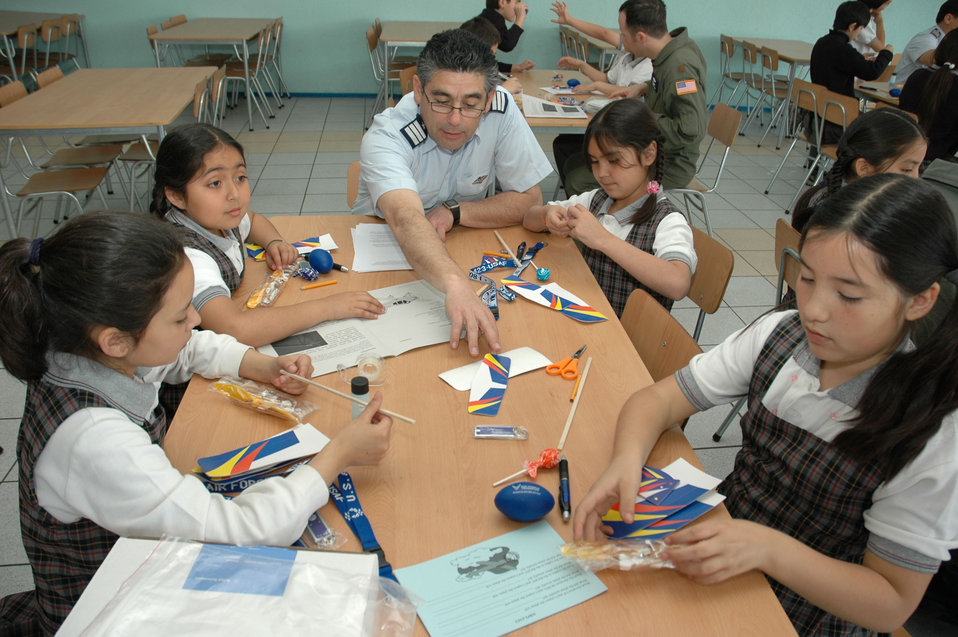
Airmen, Chilean school 'partner' to teach children aviation

A Chilean air force officer assists a group of students at the Complejo Educacional Esperanza School in Santiago, Chile, during a community outreach event on Oct. 27. The model airplane kits were donated by a Silicon Valley technology company for use with Operation Southern Partner, an Air Forces Southern-led exchange aimed at providing intensive, periodic subject matter exchanges with partner nations in the U.S. Southern Command area of focus. Included in the exchange is visits like this one where Airmen partnered with local U.S. Embassy volunteers, Chilean air force officers, members of the U.S. Military Group and volunteers from Agilent Technologies to teach children about the practical applications of the sciences.